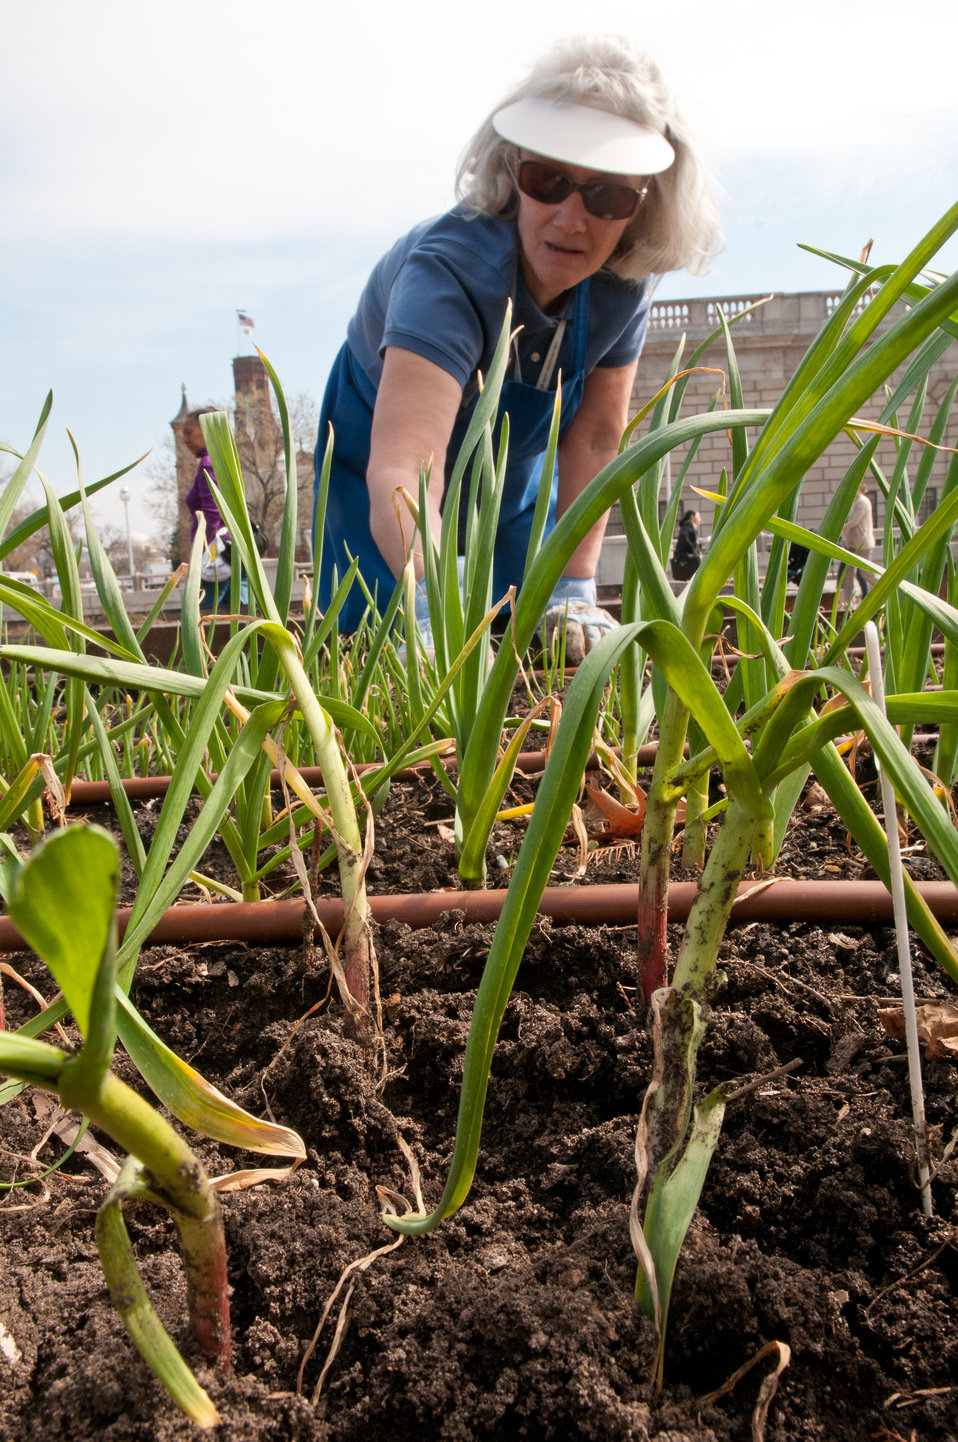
U.S. Department of Agriculture (USDA) Agricultural Research Service Administrative Assistant Pat Dobson relocates some young onions at The People's Garden in Washington DC, on Thursday, March 17, 2011. Volunteers pitch in several times a week, at various times of the day (before or after work hours, or during lunchtime) to weed, mulch, plant, water and what ever it takes to grow a wide variety of produce. Although a few are ornamental, most are destined for charity kitchens. Located on the corner of Jefferson Dr. SW and 12th St. SW, people often stop to ask questions about the garden. Part of the volunteers’ training is to be a spokes person for the People's Garden Initiative, an effort by the USDA that challenges its employees to establish People's Gardens at USDA facilities worldwide or help communities create gardens. People's Gardens vary in size and type, but all have a common purpose - to help the community they're within and the environment.